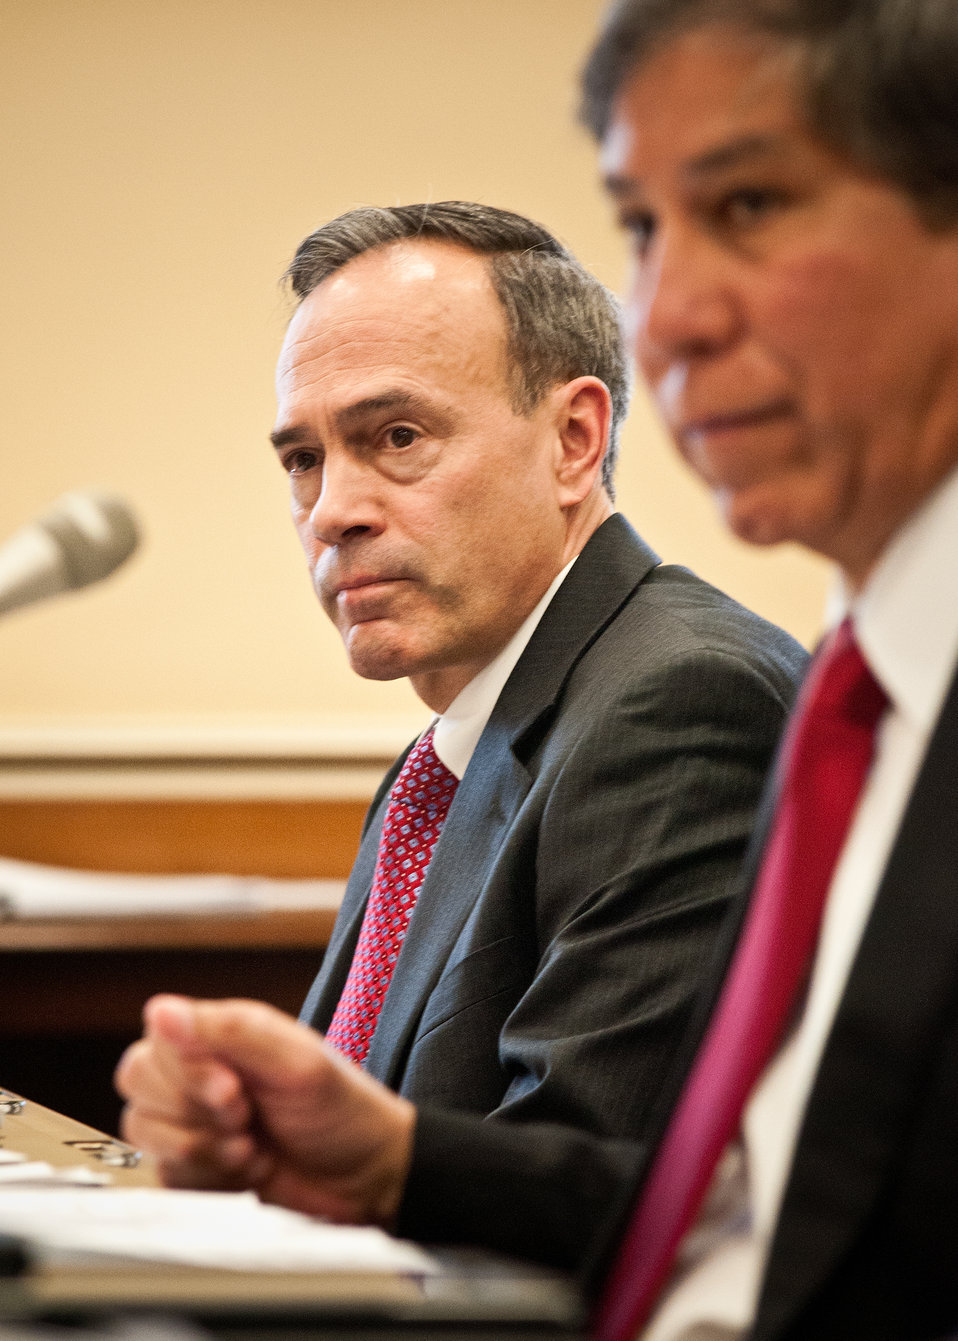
Alan Christian (left), Acting Administrator, Grain Inspection Packers Administration listens to questions posed by members of the House Agriculture Appropriations Subcommittee while testifying on Capitol Hill with Ed Avalos (right), Under Secretary, Marketing and Regulatory Programs and representatives of the Marketing and Regulatory Program agencies on their fiscal year 2013 budget requests in Washington, D.C., Tuesday, March 6, 2012.